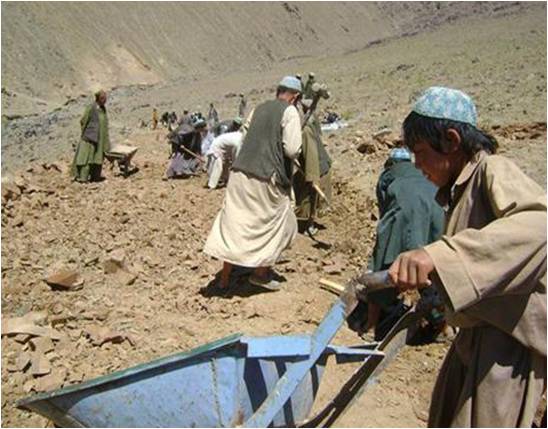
Projects Underway to Support Local Population